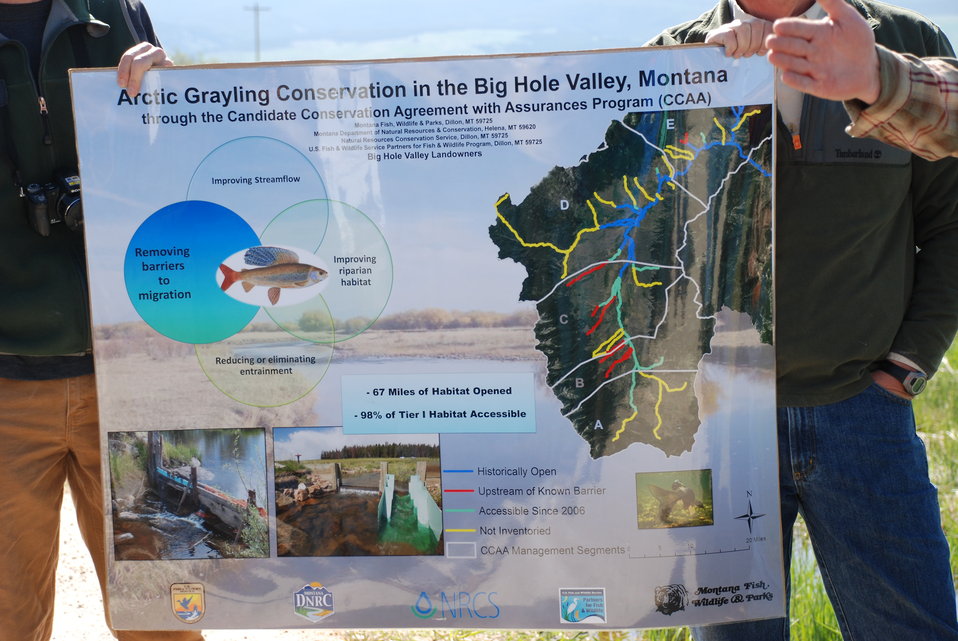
Regional Leadership Visit to Montana 2014